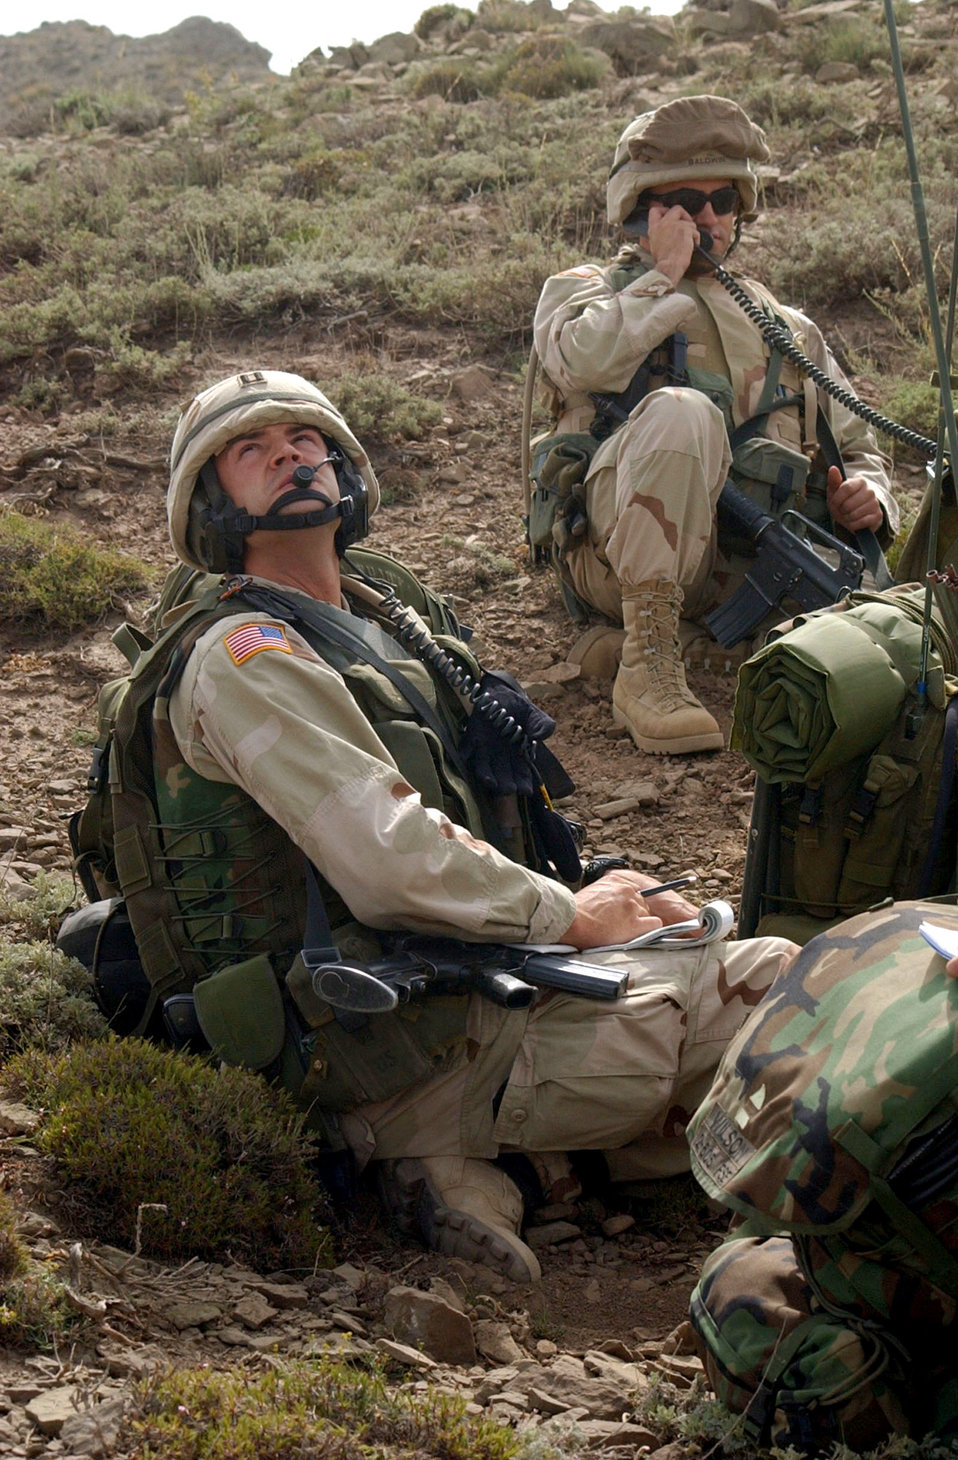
Thunder above

OPERATION ENDURING FREEDOM -- Capt. Danny Stout, an air liaison officer deployed with the Army's 2-505 Parachute Infantry Regiment of the 82nd Airborne Division, guides A-10 Thunderbolt IIs onto his location in the mountains of Afghanistan. Stout, a B-52 Stratofortress pilot serving a two-year tour with the Army, was part of the initial air assault into the hostile area, where he immediately set up his radio and began talking with the fighter aircraft.